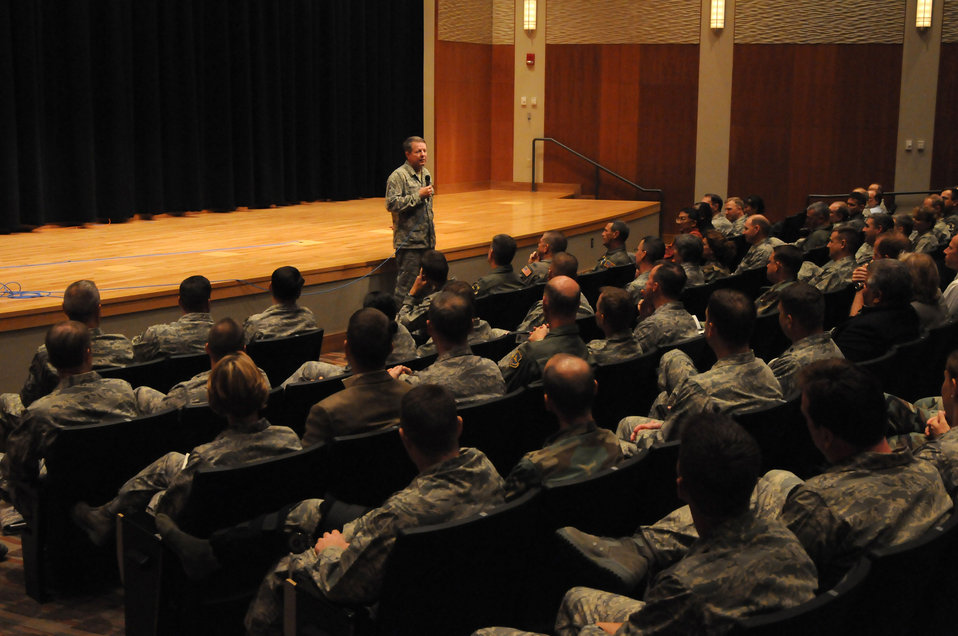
Straight from the chief

Chief Master Sgt. of the Air Force Rodney J. McKinley serves as a guest speaker at the Air Force Intelligence, Surveillance and Reconnaissannce Agency Commander's Conference held at the National Air and Space Intelligence Center Sept. 9 at Wright-Patterson Air Force Base, Ohio. During his visit, the chief visited with enlisted, officer and civilian employees and answered questions from Airmen. He is the 15th chief master sergeant of the Air Force.